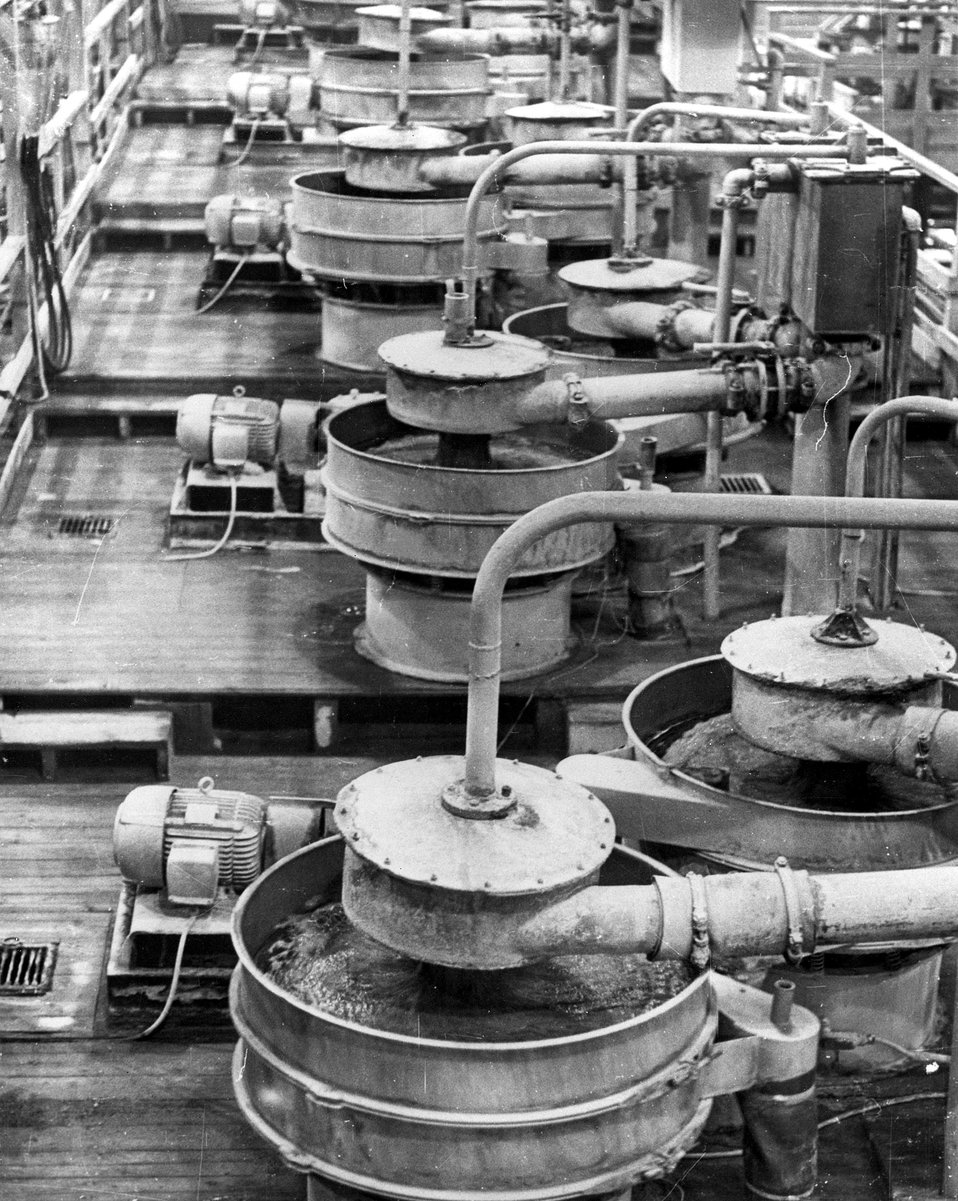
Uranium ore is fed to the Federal-American Partners 950-ton a day mill at Gas Hills, Riverton, Wyoming. c. 1976